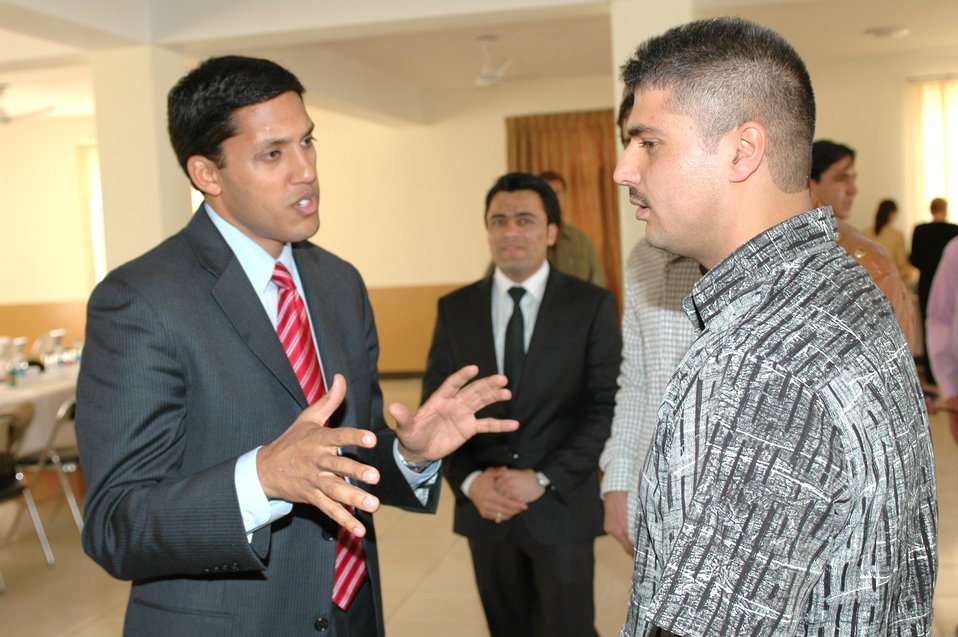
Dr Shah Visits Votech in Kabul